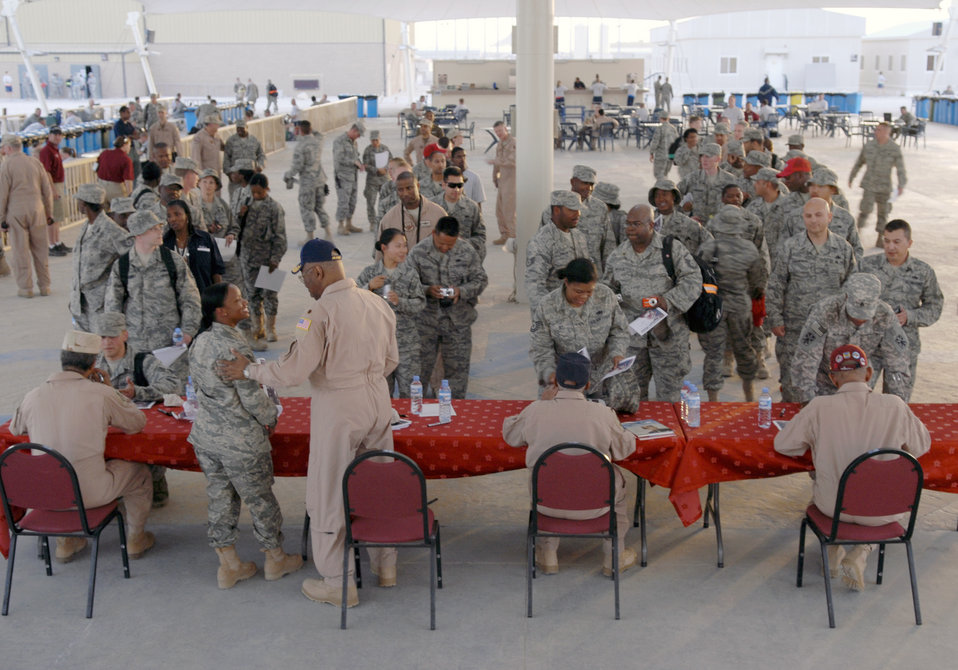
Tuskegee Airmen visit Southwest Asia

Members of the 379th Air Expeditionary Wing line up for autographs and photos with four original members of the Tuskegee Airmen April 22 at an air base in Southwest Asia. The members were retired Lt. Cols. Alexander Jefferson and James Warren; retired Maj. George Boyd and former Staff Sgt. Phillip Broome. The Tuskegee Airmen toured the wing's operations center.